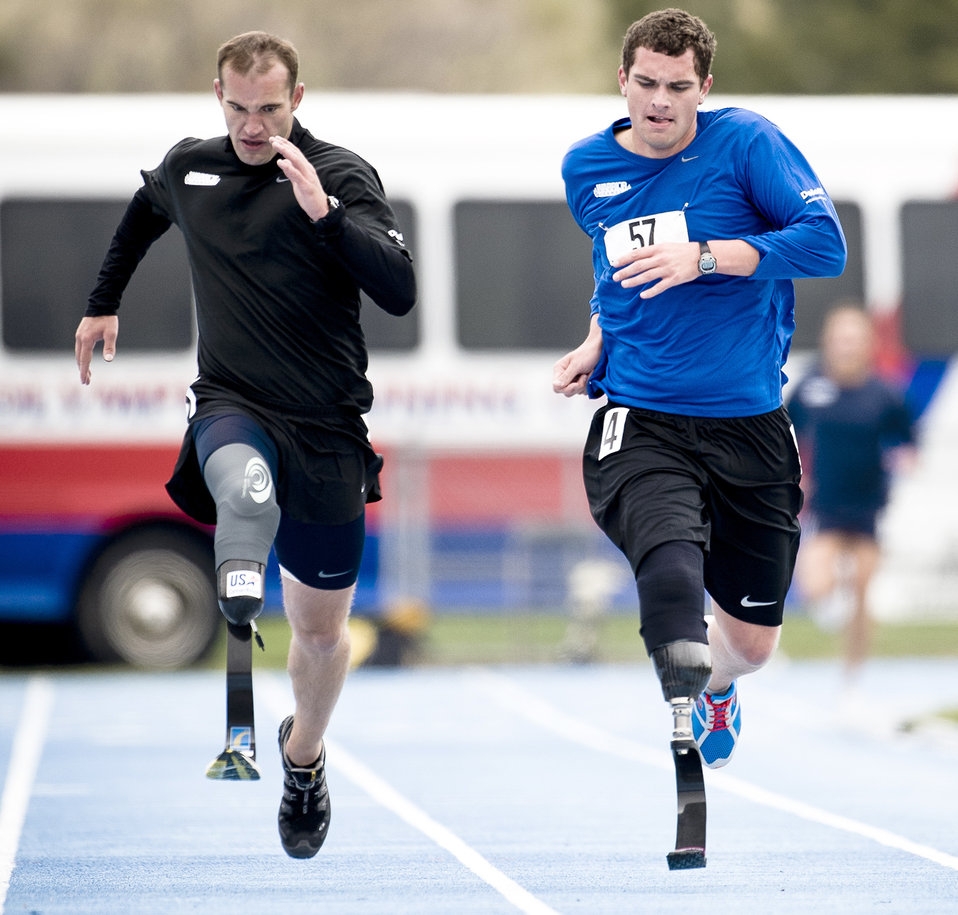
1st Lt Ryan McGuire

1st Lt. Ryan McGuire (right) sprints the last leg of the 1,500m dash to take fourth place during the Warrior Games May 14, 2010, in Colorado Springs, Colo.